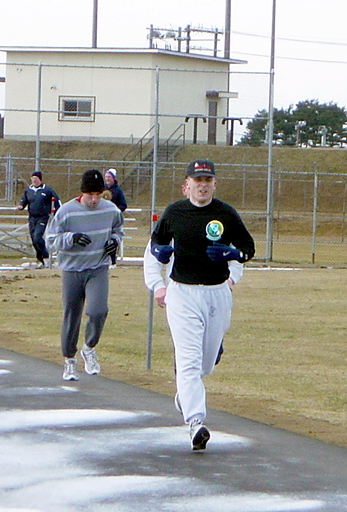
Frigid fitness

MISAWA AIR BASE, Japan -- Runners brave temperatures in the low 30s during a